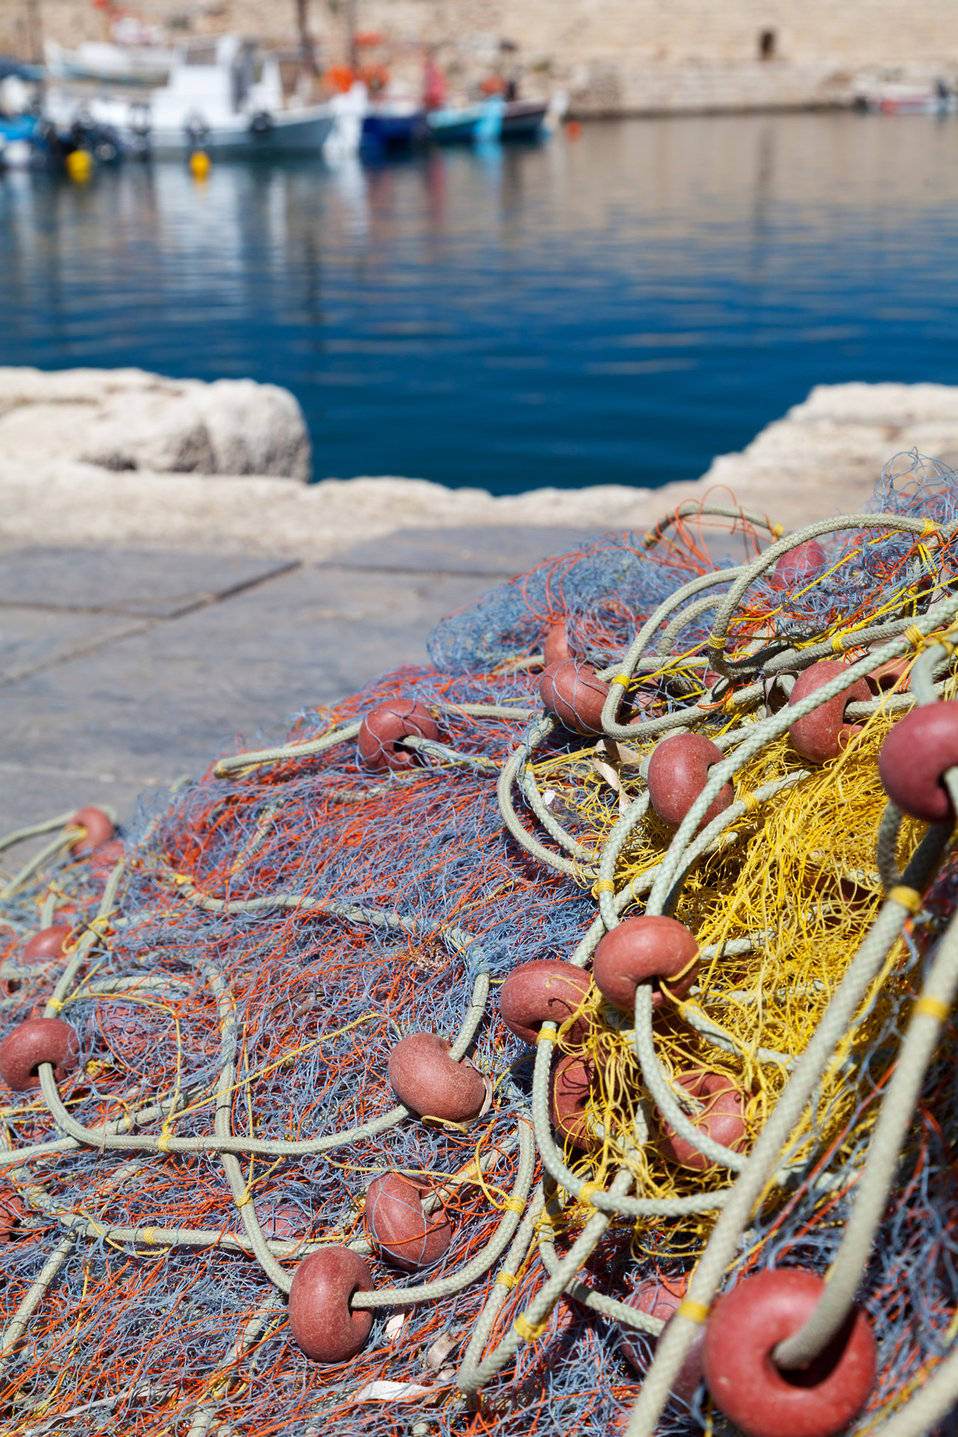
Fishing nets in harbor.